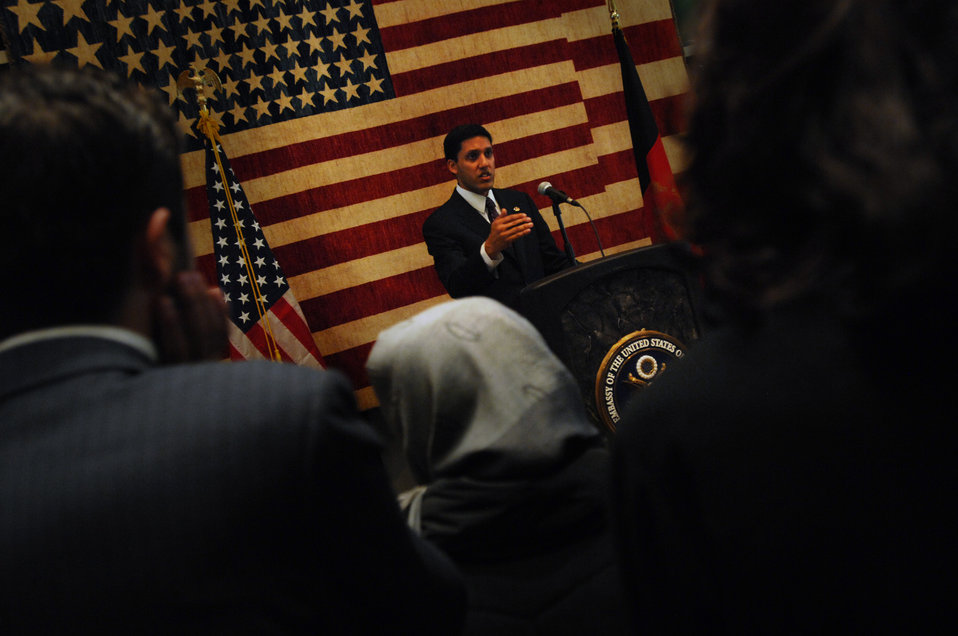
110208sv Shah086

Dr. Rajiv Shah, Administrator of the United States Agency for International Development (USAID), holds a town hall meeting at the U.S. Embassy in Kabul, Afghanistan on Tuesday, February 8, 2011. (S.K. Vemmer/Department of State)